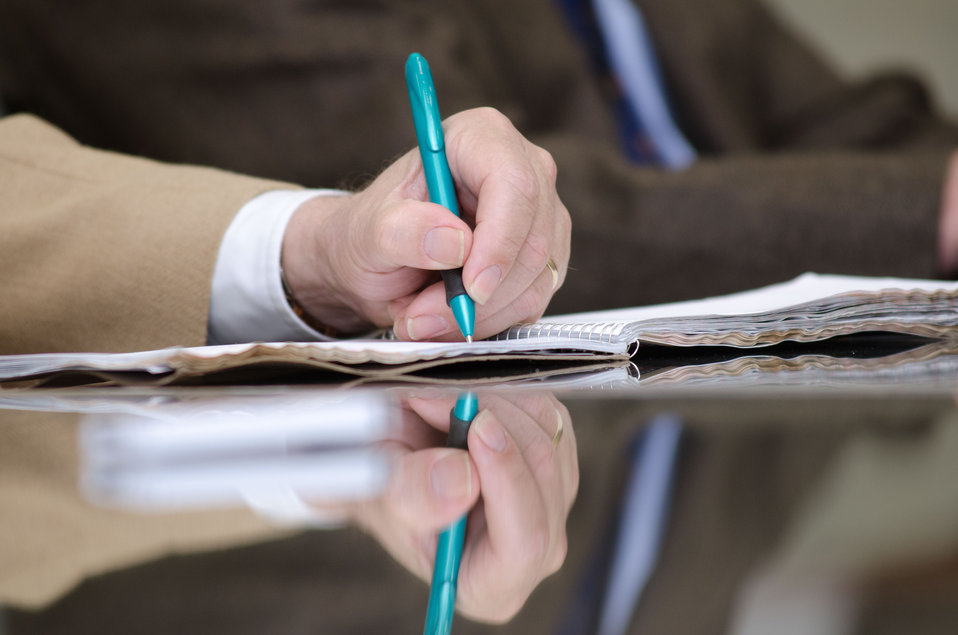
A reporter takes notes as Agriculture Secretary Tom Vilsack briefed in-house reporters and held a media conference call to review the Agriculture FY2013 budget in Washington, D.C. on Monday, February 13, 2012.